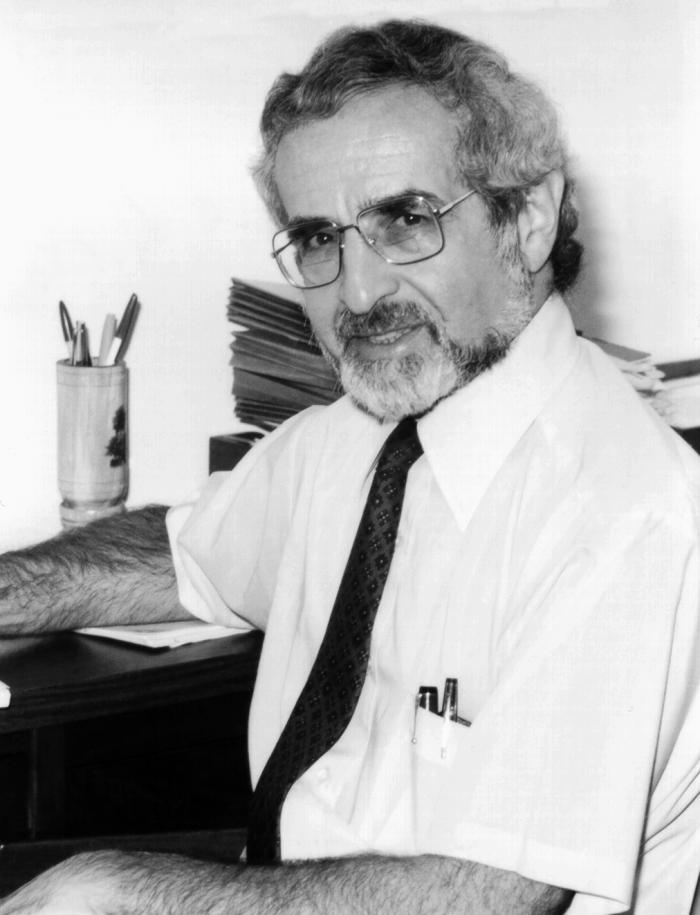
This is former Centers for Disease Control and Prevention administrator and EIS Officer Phillip S. Brachman, M.D.